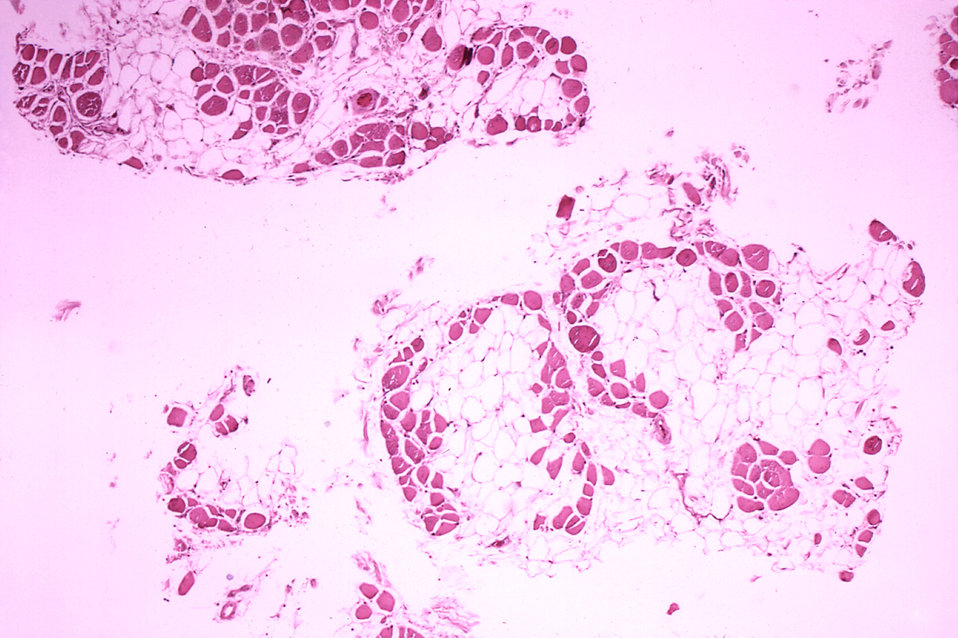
Histopathology of Duchenne muscular dystrophy